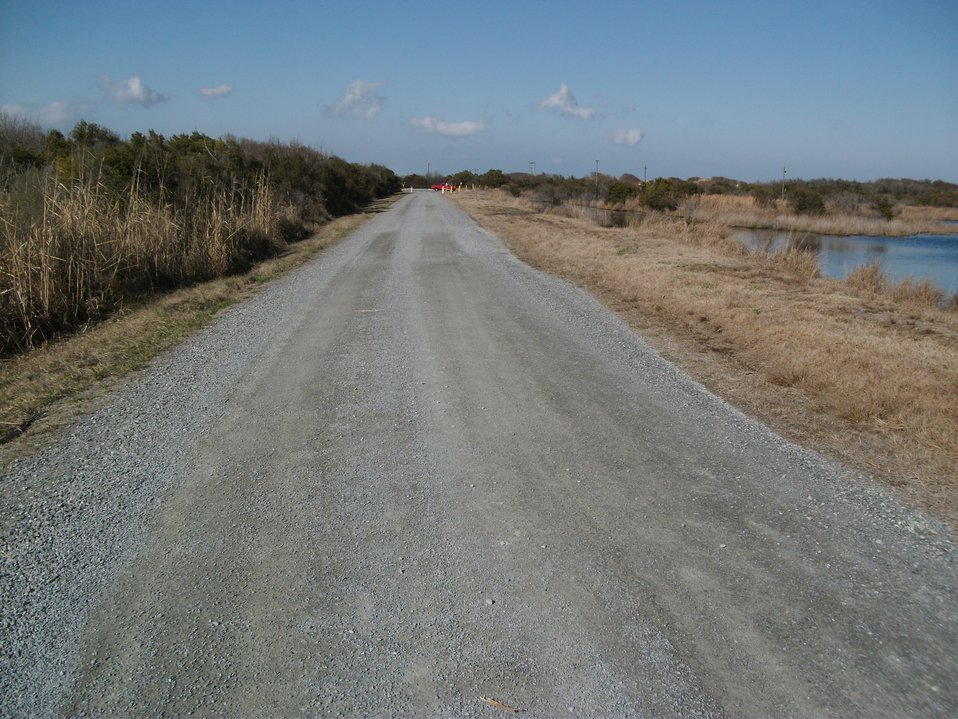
Access road restored at Back Bay National Wildlife Refuge (VA)

An important emergency evacuation route that eroded during Hurricane Sandy is restored for residents of coastal North Carolina at Back Bay National Wildlife Refuge in Virginia Beach.